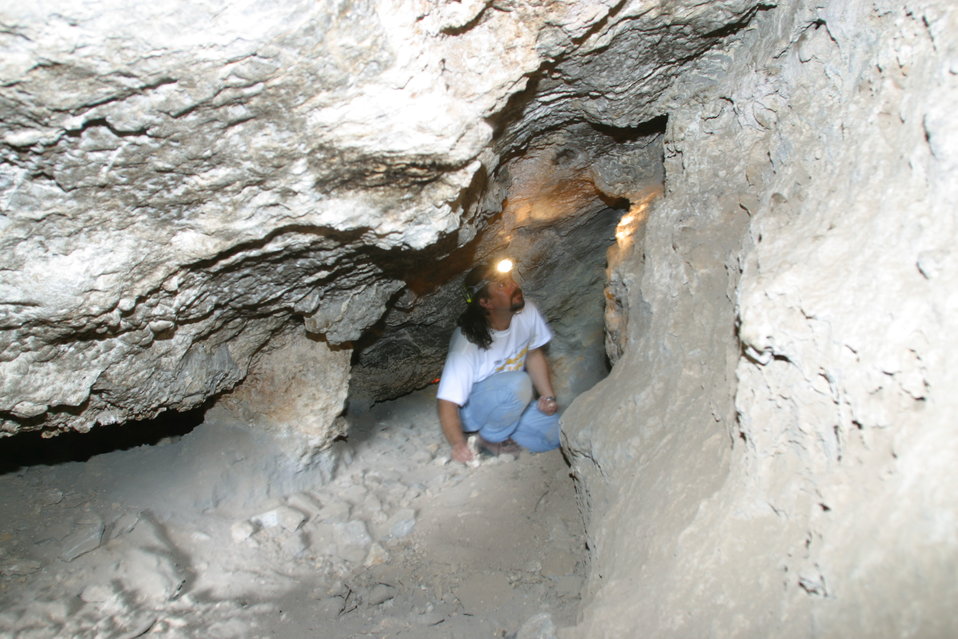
Conservation at Santa Fe

A member of Rodrigo Medellin's conservation team studies bat ecology in caves at Santa Fe.